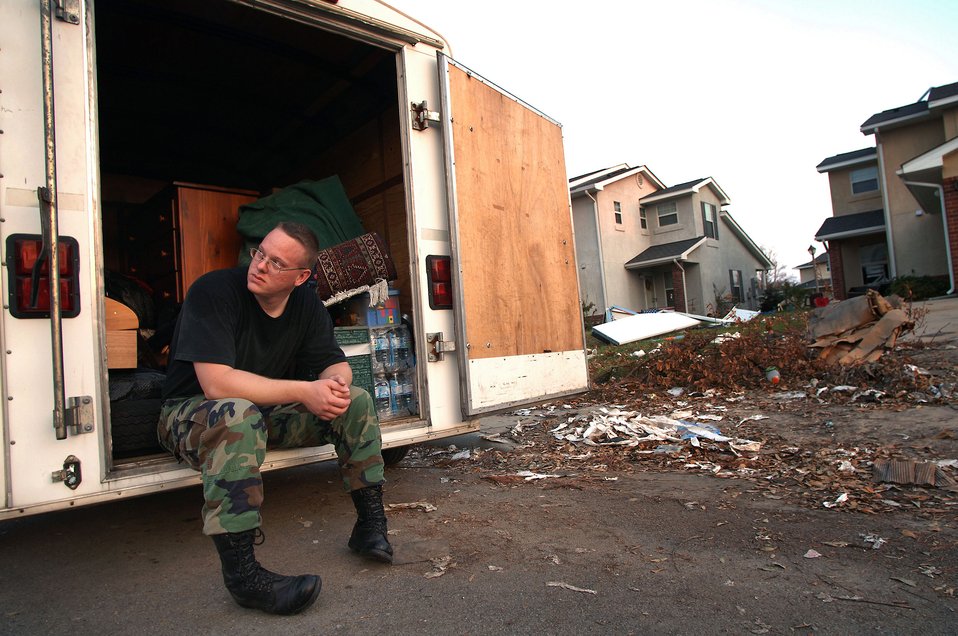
Trying to recover

KEESLER AIR FORCE BASE, Miss. -- Staff Sgt. Jerome Adams rests while helping his friend and coworker Tech. Sgt. Brad Godwin recover items left undamaged by Hurricane Katrina at his base house here. The two sergeants are weather technical school instructors.